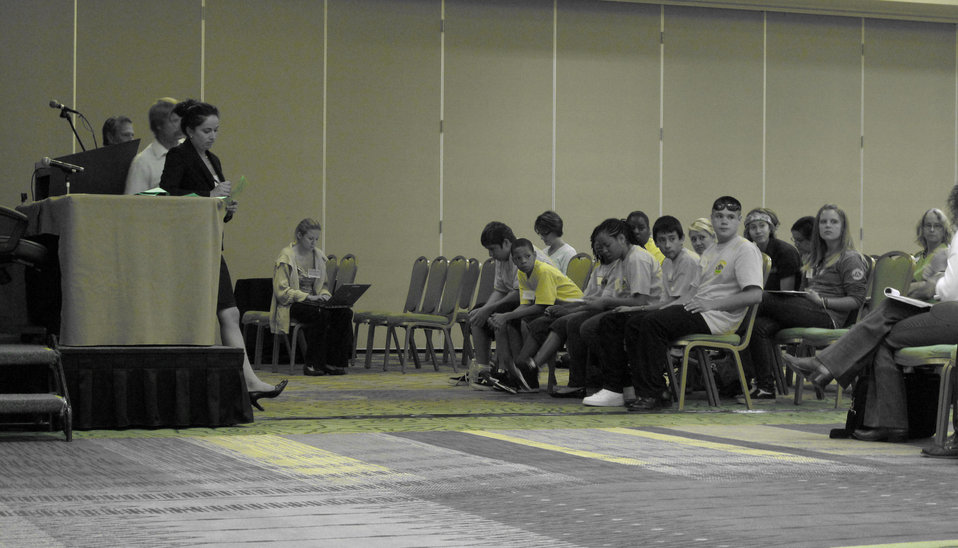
America's Outdoor Initiative Youth Conference

The youth along with adults were split into several smaller discussion groups, where they were able to voice their opinion about how the government can help to get youth outdoors and where to focus funding.